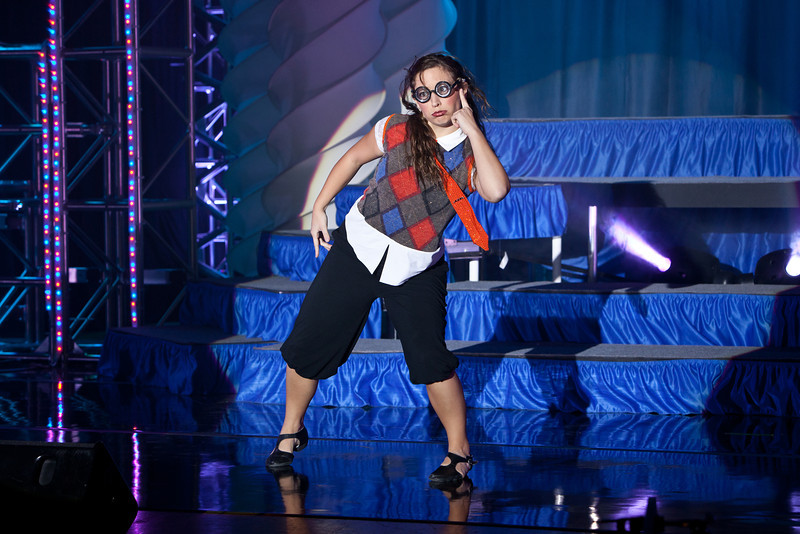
Getting weird

First Lt. Sarah Ruzzin transforms from a lyrical dancer to a 'nerdy' dancer during her dance performance at the 2012 Air Force Worldwide Talent Search at Lackland Air Force Base, Texas, Jan. 15, 2012. Ruzzin, who is from Eglin Air Force Base, Fla., won first place for dance during the competition, which took place Jan. 9-16.